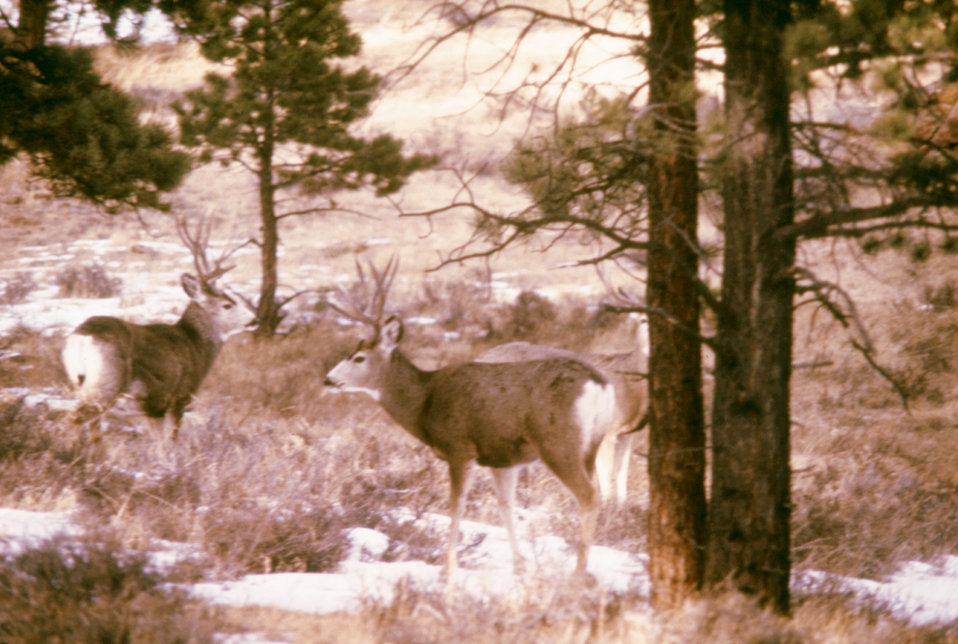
These are mule deer, Odocoileus hemionus, the major host of the adult winter ticks, Dermacentor albipictus.